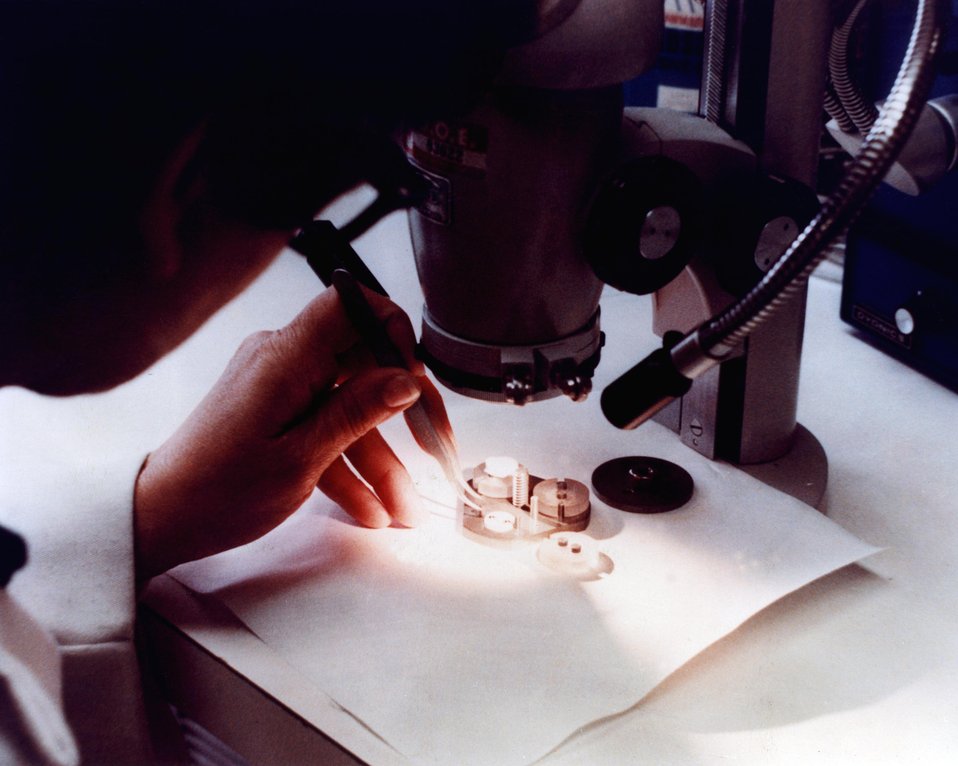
VIEW OF SOME OF MOUND'S CERAMIC COMPONENTS.

AT THE MOUND FACILITY, RESEARCHERS WORK ON EXPLOSIVES TECHNOLOGY, TRITIUM TECHNOLOGY, PLUTONIUM-238 ISOTOPIC HEAT SOURCE DEVELOPMENT AND ASSEMBLY, AND ISOTOPIC SEPARATION. FABRICATING EXPLOSIVE COMPONENTS, SUCH AS DETONATORS,EXPLOSIVES TIMERS, AND EXPLOSIVES PELLETS, FOR NUCLEAR WEAPONS IS THE MAJOR PRODUCTION ACTIVITY. THE MOUND FACILITY STAFF IS DEVELOPING MATERIALS, PROCESSES, AND EQUIPMENT FOR POTENTIAL PRODUCTION APPLICATIONS TO SUPPORT PROGRAMS AT SEVERAL DOE LABORATORIES. THE MOUND FACILITY IS OPERATED FOR DOE BY MONSANTO RESEARCH CORPORATION. THE MOUND FACILITY DOES NOT STORE, HANDLE, OR OTHERWISE DEAL WITH COMPLETED NUCLEAR WEAPONS. BECAUSE OF THEIR LONG-TERM STABILITY, METALLIC CERAMIC (CERMET) AND GLASS CERAMICS ARE REPLACING OTHER MATERIALS IN WEAPONS. SINCE 1977, MOUND HAS BEEN DEVELOPING AND PRODUCING CERAMICS FOR USE IN MOUND- BUILT DETONATORS AND ACTUATORS.